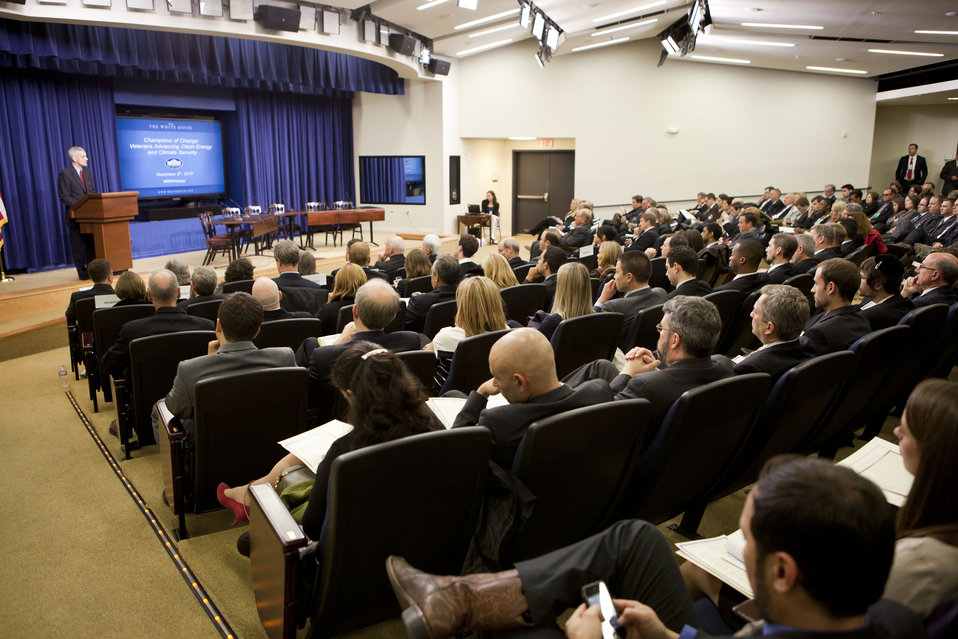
White House Chief of Staff, Denis McDonough, addresses attendees at the Champions of Change event.